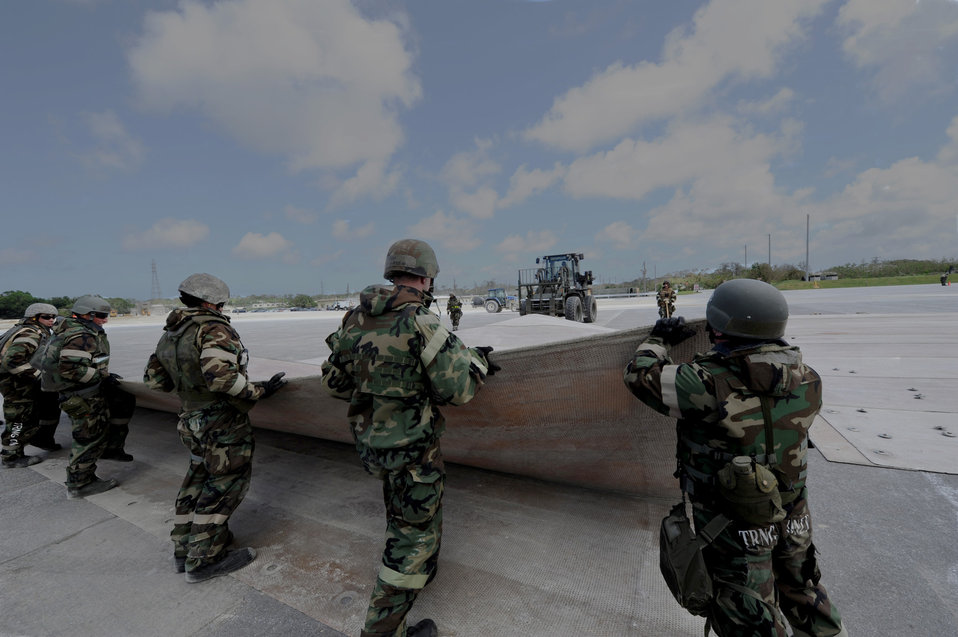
Silver Flag

Civil engineers fold a fiberglass mat June 28, 2011, during Silver Flag at Kadena Air Base, Japan.